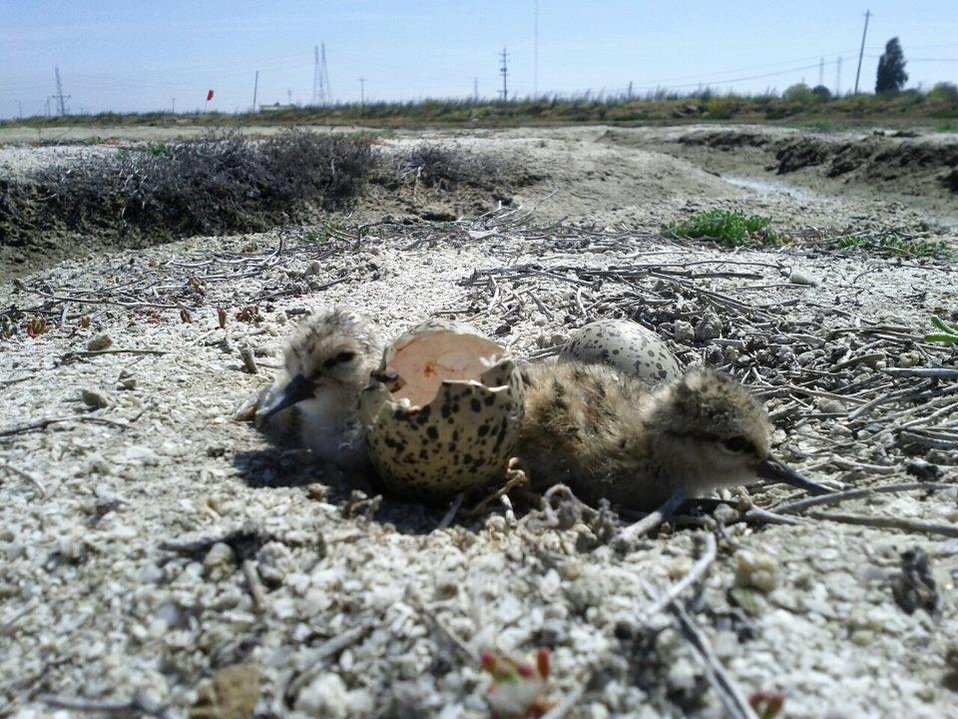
American Avocet chicks are starting to hatch around the refuges of San Francisco Bay National Wildlife Refuge Complex. These were found at Unit SF2 in East Palo Alto. (May 10, 2012)